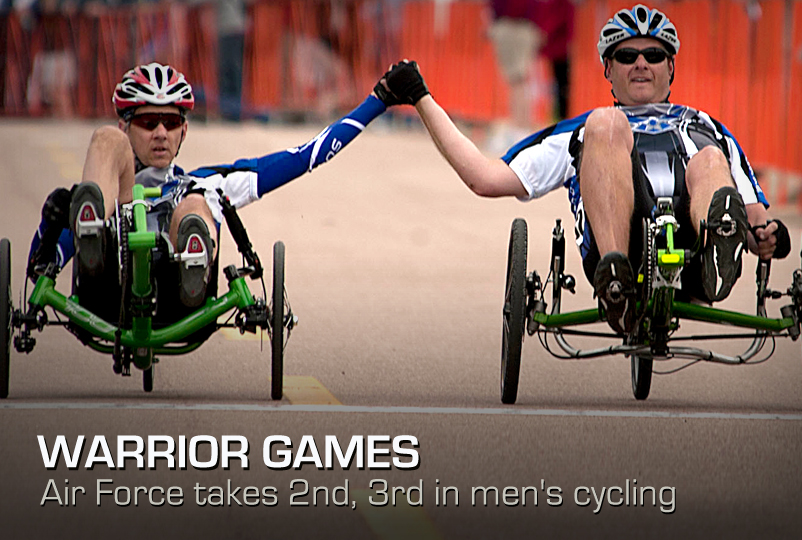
Warrior Games